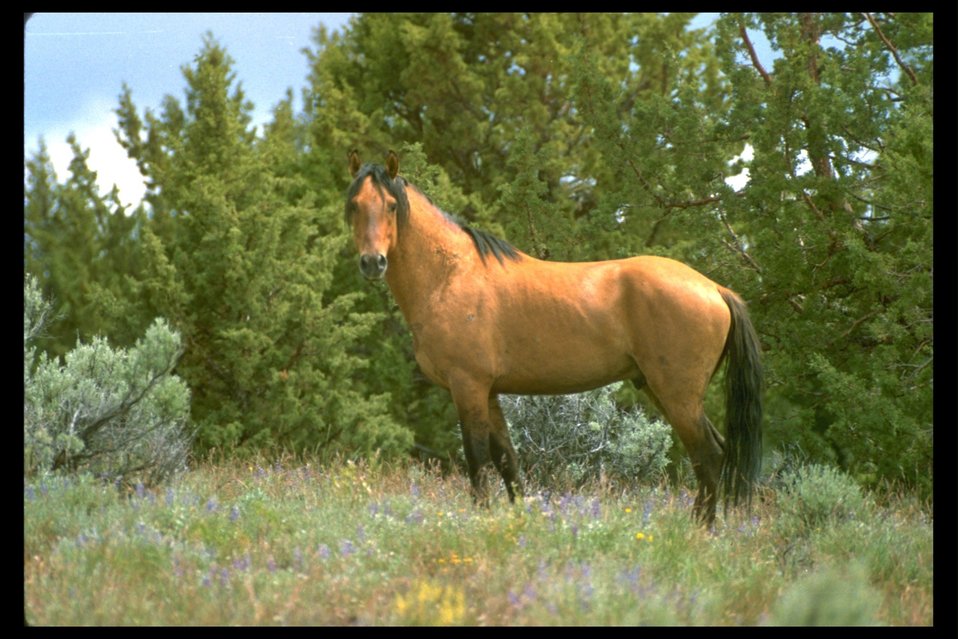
Dominant Kiger Stallion in Kiger HMA.